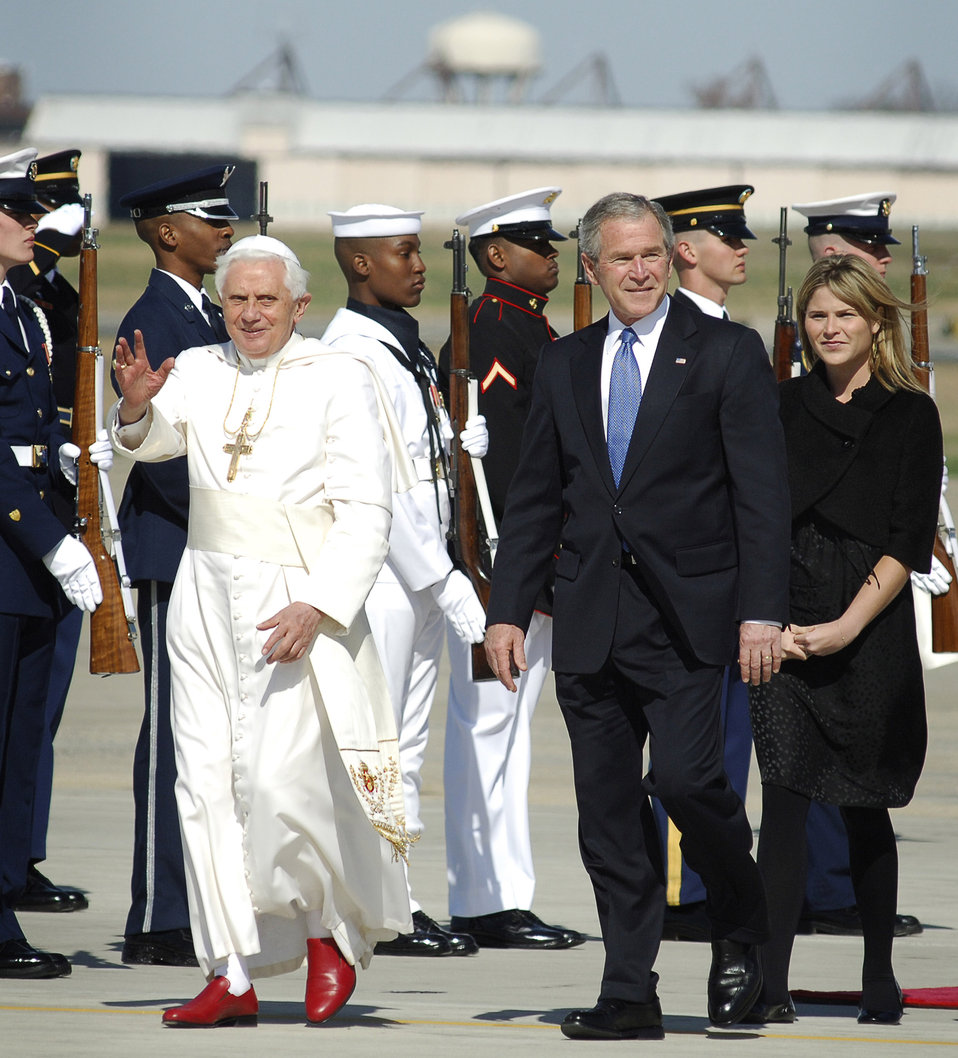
Pope arrives at Andrews

Pope Benedict XVI talks to President George W. Bush upon his arrival as he is escorted past a joint honor guard April 15 at Andrews Air Force Base, Md. The pope is visiting the United States for a week and will meet with President Bush at the White House, address the presidents of Roman Catholic colleges and universities, and celebrate Mass at Nationals Park in Washington, D.C., and Yankee Stadium in New York City. The pontiff was selected as the 265th pope on April 19, 2005.